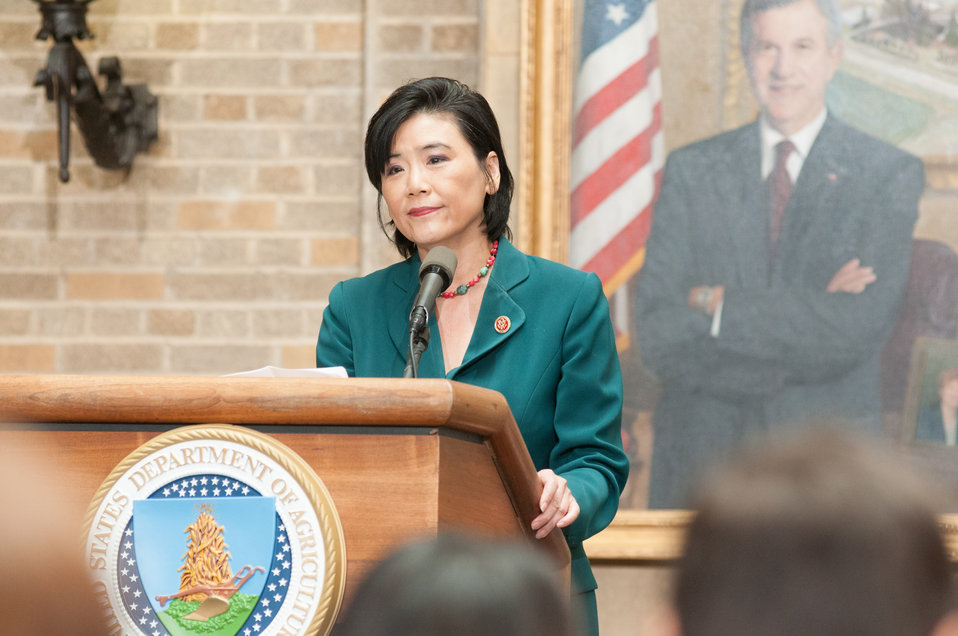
U.S. Representative Judy Chu (CA) speaks during the U.S. Department of Agriculture (USDA) Asian Pacific American Heritage Month Observance, at the USDA headquarters in Washington, D.C., on Thursday, May 23, 2013. This year’s theme is “Building leadership; Embracing the Cultural Values and Inclusions.”